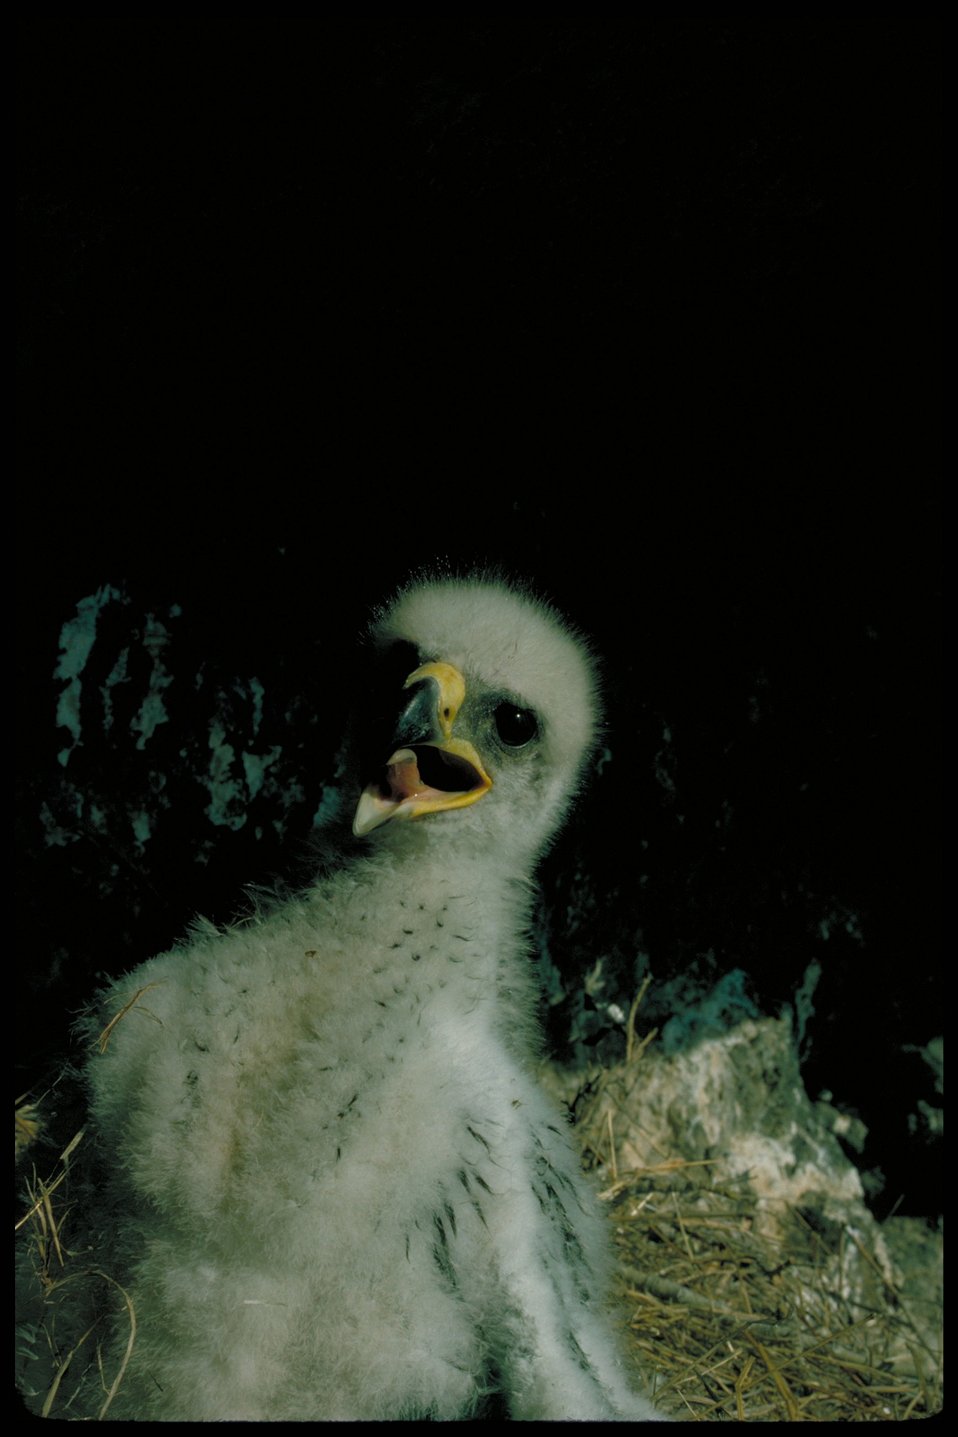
Chick Birds of Prey National Conservation Area BOP Owyhee Field Office LSRD Lower Snake River District